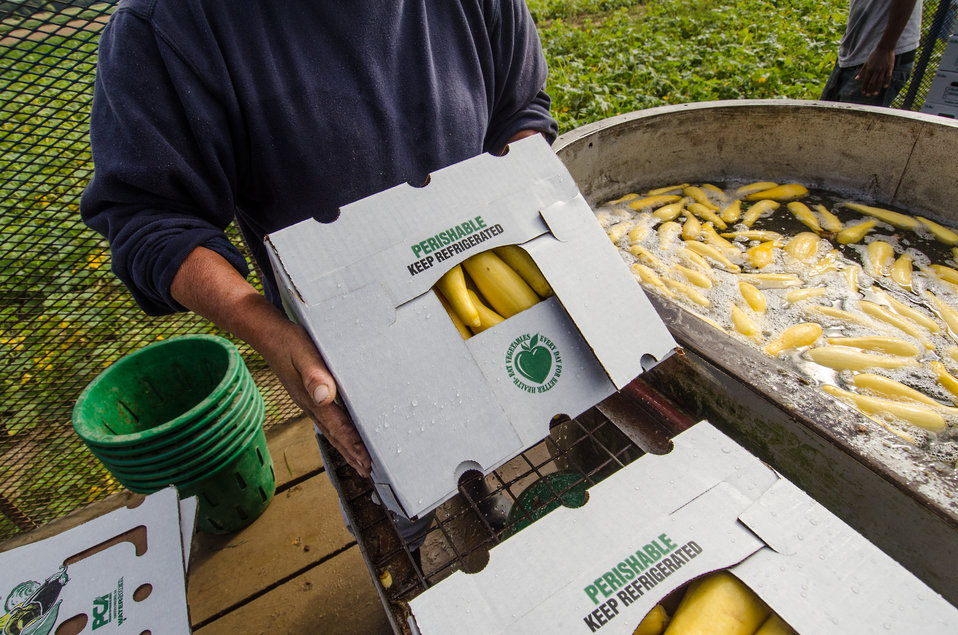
Migrant workers rinse and pack just-picked yellow squash on a slowly moving processing trailer at Kirby Farms in Mechanicsville, VA on Sep. 20, 2013. Kirby Farms is a third-generation family farm that covers 500 acres, and generates produce and grains on a year-around operation.